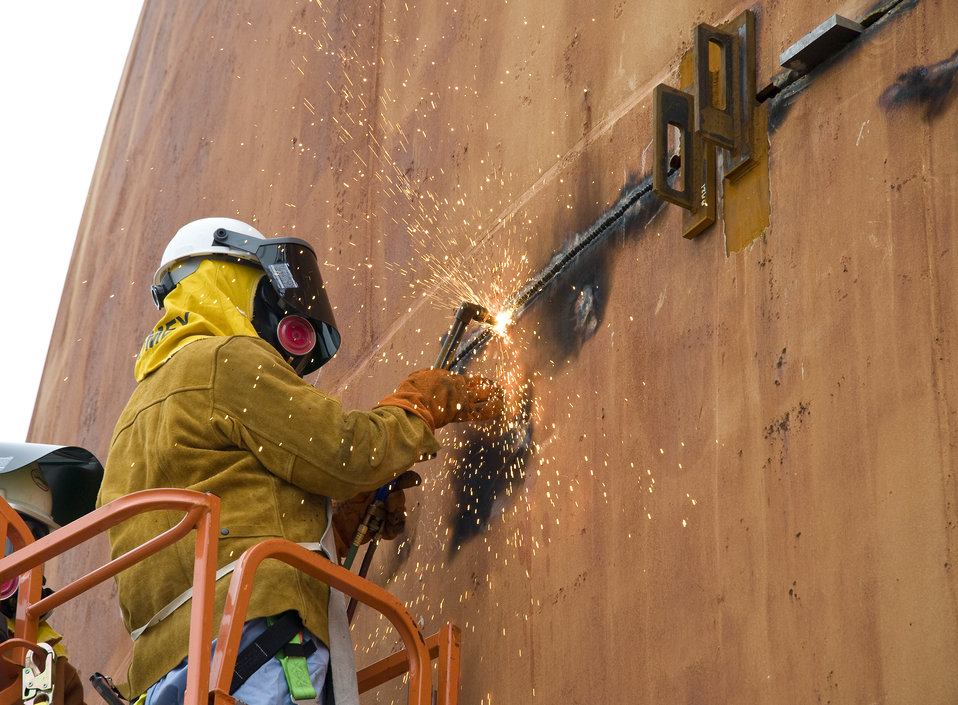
HWCTR Decommissioning

Work is under way to decommission the Heavy Water Components Test Reactor. Here, a Recovery Act welder cuts into HWCTR's dome to free it for removal.